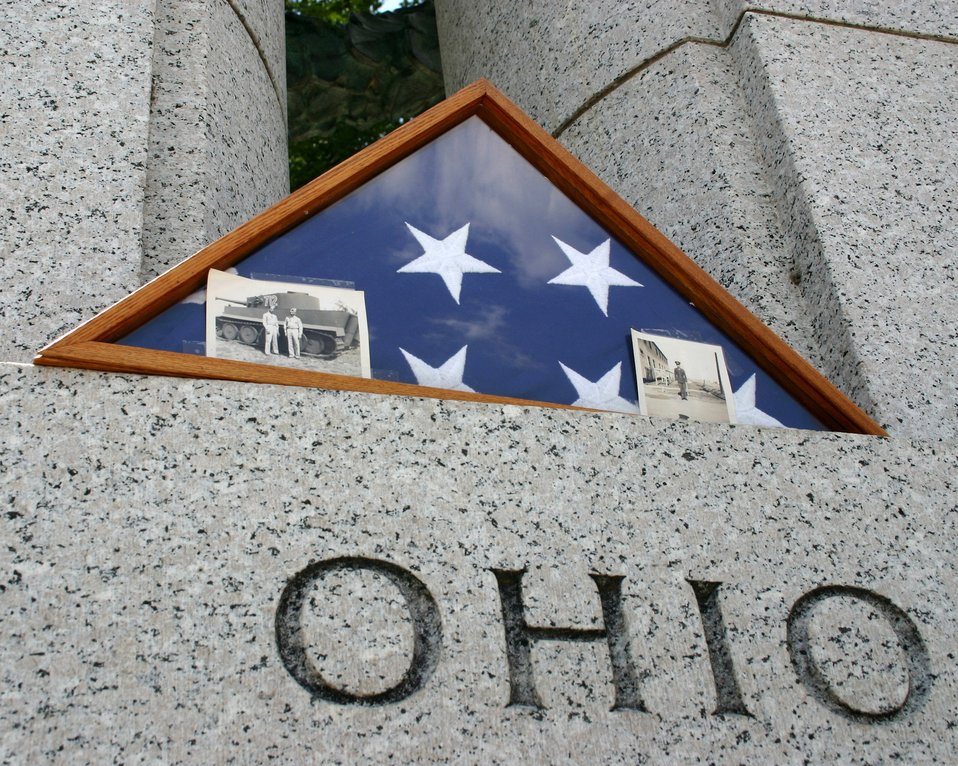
Memorial visit a family affair for top enlisted Airman, uncle

A flag honoring the late Robert Limpf, a World War II veteran from Toledo, Ohio, is displayed June 25 over the state's portion of the World War II Memorial in Washington, D.C. The flag was brought to the memorial by familiy members who were part of a delegation of World War II veterans and their families from the Honor Flight organization. The photos inside the frame are of the Mr. Limpf during his service in Europe as part of the 786th Tank Battalion.